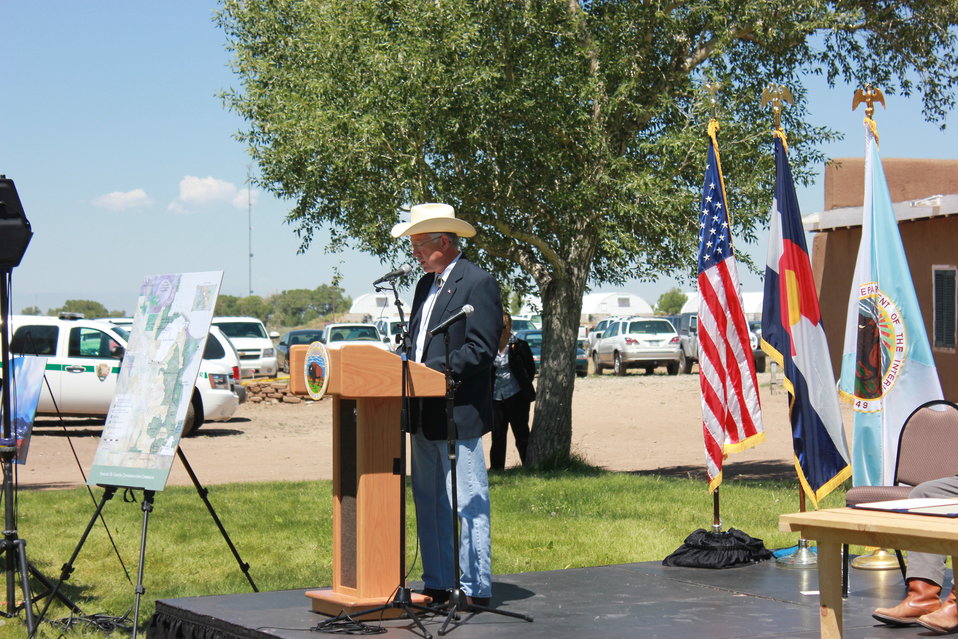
Historic Conservation Easement in Sangre de Cristo Mountains